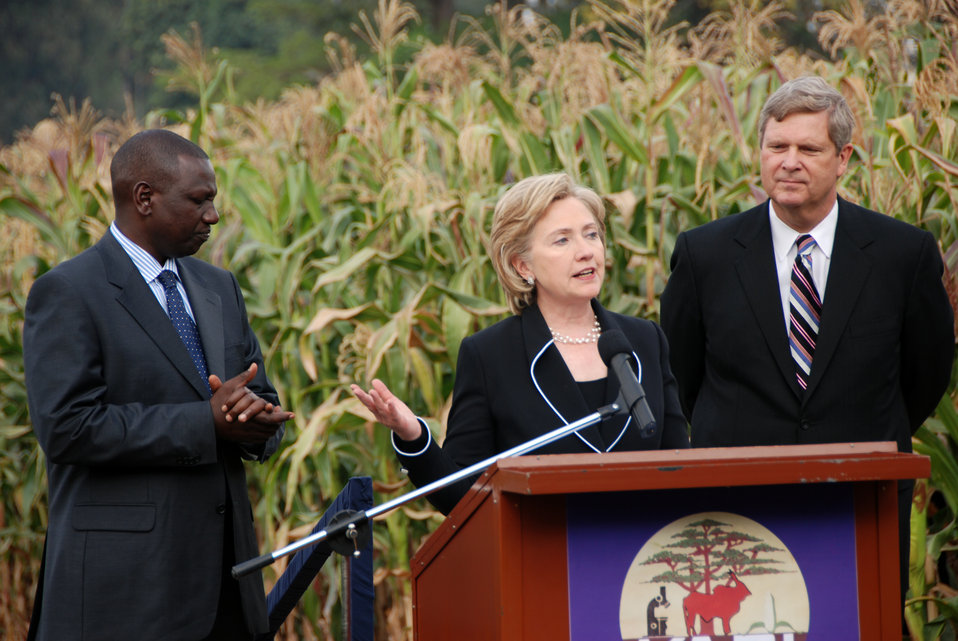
Secretary Clinton Visits Kenyan Agricultural Research Institute

U.S. Secretary of State Hillary Rodham Clinton provides remarks in an agricultural trial corn field during a tour of the Kenyan Agricultural Research Institute (KARI) near Nairobi, Kenya August 5, 2009.